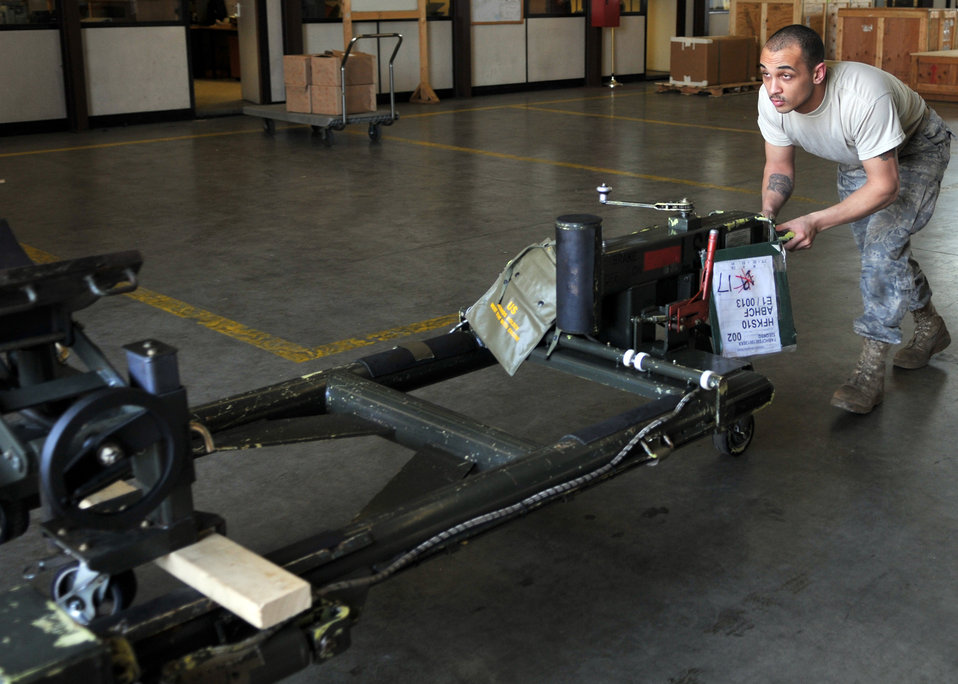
Operation Odyssey Dawn

SPAGDAHLEM AIR BASE, Germany?A 52nd Logistics Readiness Squadron traffic management Airman loads cargo into a truck in support of Operation Odyssey Dawn March 21. Joint Task Force Odyssey Dawn is the U.S. Africa Command task force established to provide operational and tactical command and control of U.S. military forces supporting the international response to the unrest in Libya and enforcement of United Nations Security Council Resolution (UNSCR) 1973. UNSCR 1973 authorizes all necessary measures to protect civilians in Libya under threat of attack by Qadhafi regime forces. JTF Odyssey Dawn is commanded by U.S. Navy Admiral Samuel J. Locklear, III.